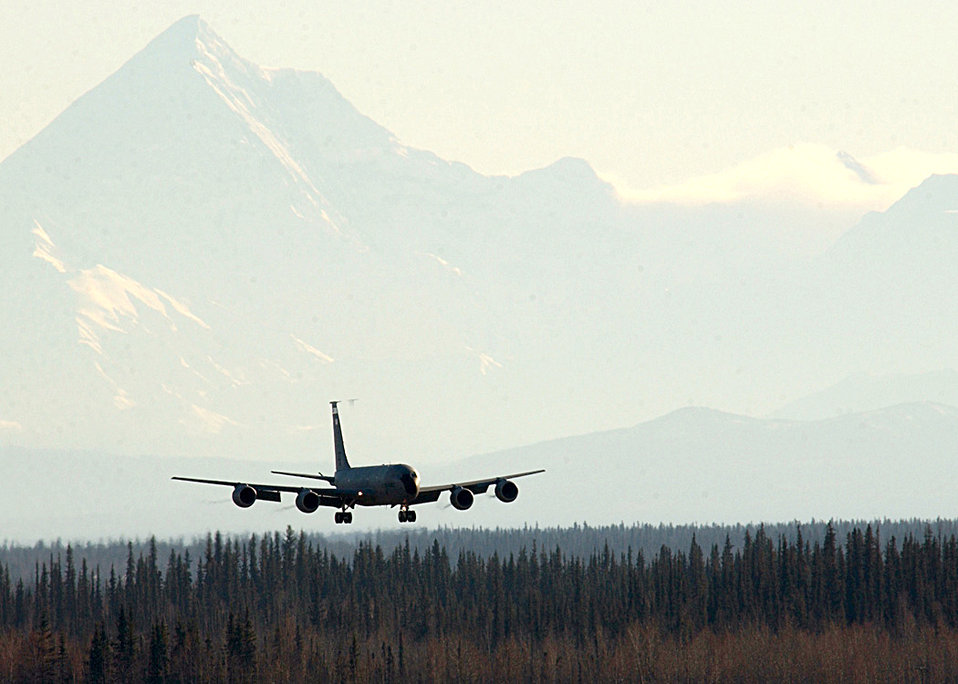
Thunderous combat

EIELSON AIR FORCE BASE, Alaska -- A KC-135 Stratotanker from Kadena Air Base, Japan, lands here Oct. 7 after an area familiarization flight in preparation for exercise Cope Thunder 06-1. The two-week Alaskan exercise is the largest air combat training exercise, involving more than 1,000 active-duty and Air National Guard Airmen and 87 aircraft.